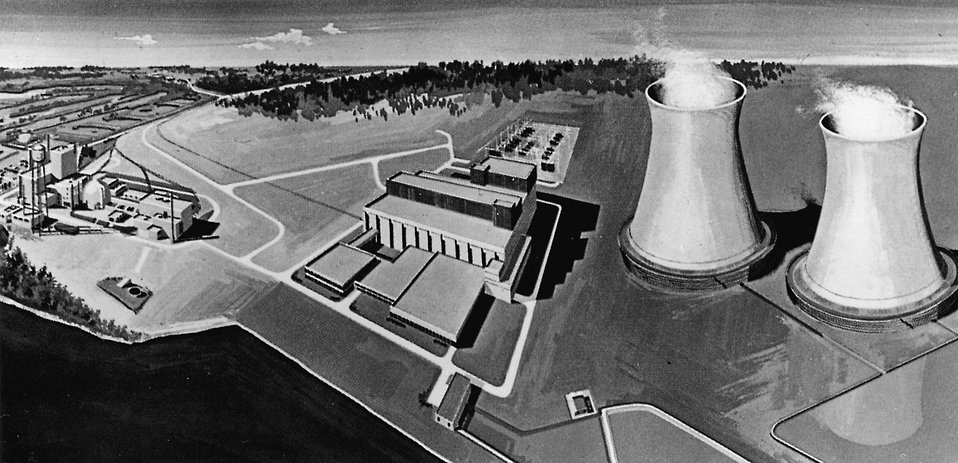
Artist's concept of the second unit of the Enrico Fermi Atomic Plant for which Detroit Edison Co. applied for a construction permit in September 1972. Circa 1973.